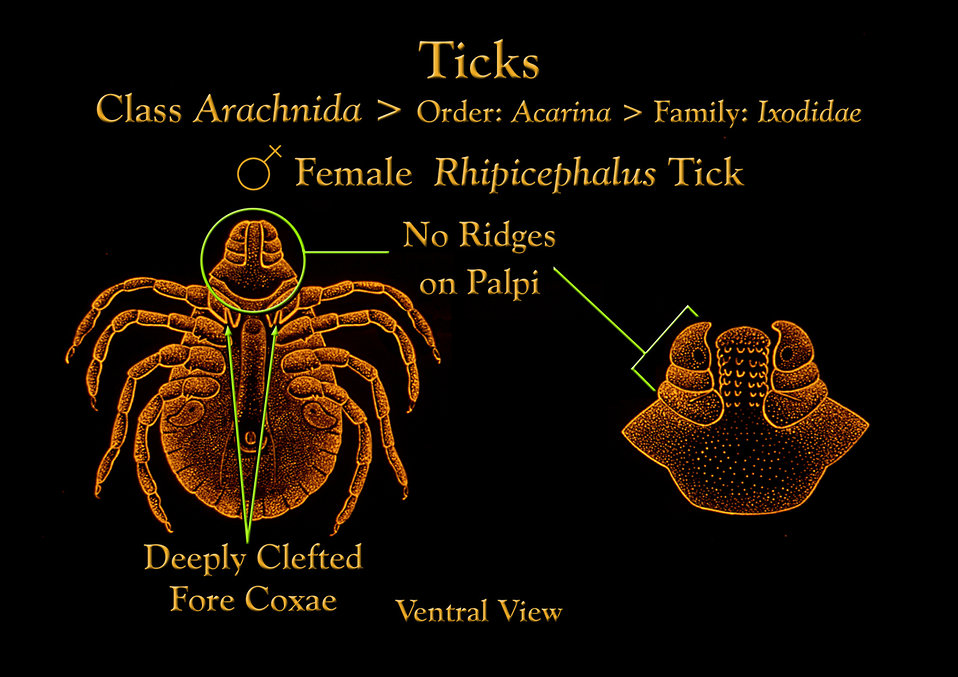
This ventral view illustration depicts a female Rhipicephalus tick showing its unridged palpi, and deeply indented fore coxae.